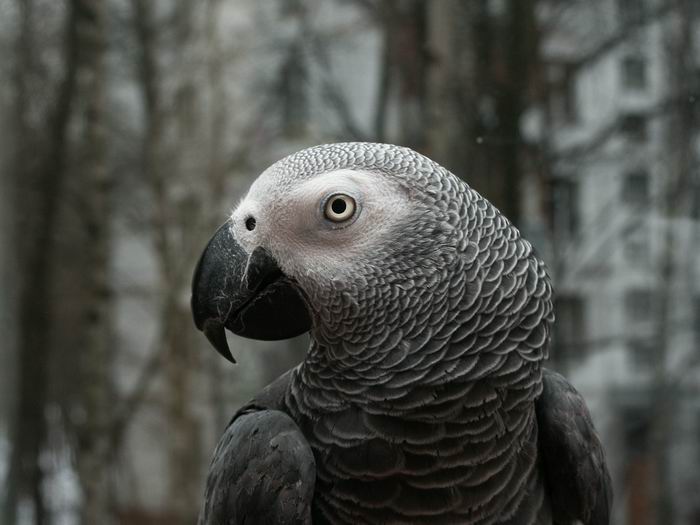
The African Grey Parrot (Psittacus erithacus). side of head and neck.